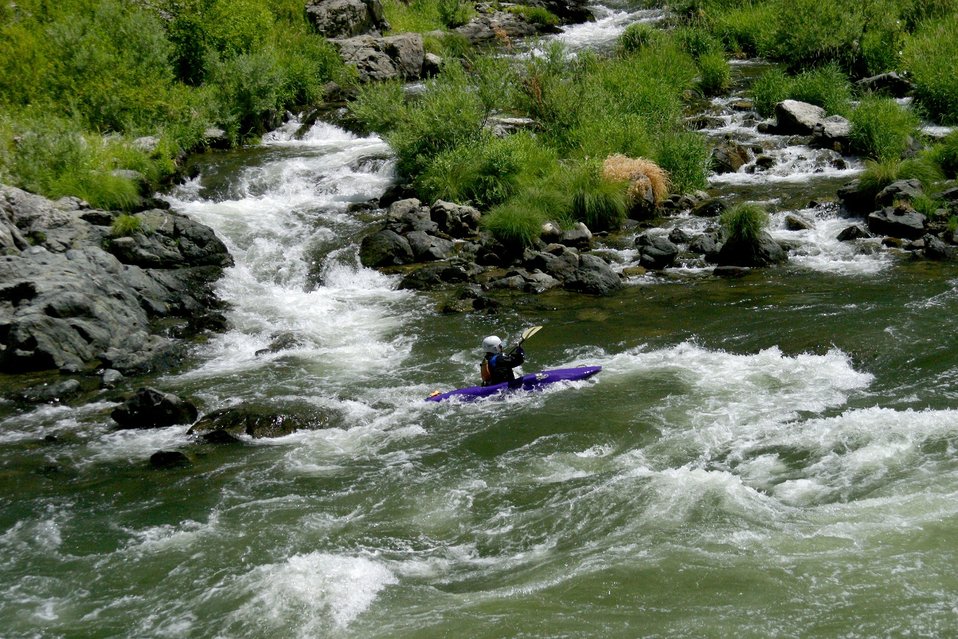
Rainie Falls Fish Ladder